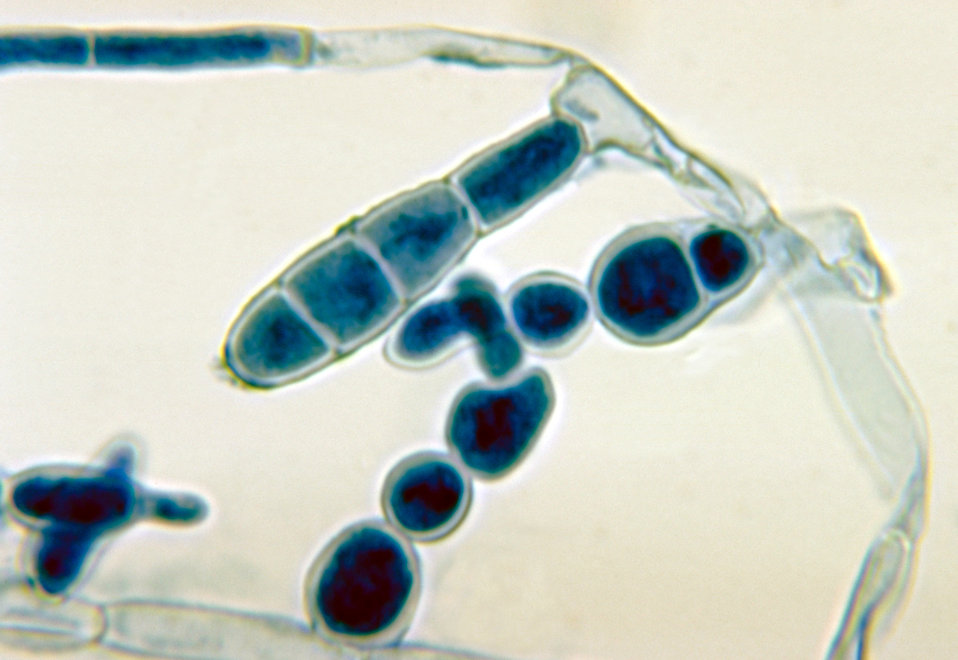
This photomicrograph reveals a number of macroconidia of the dermatophytic fungus Epidermophyton floccosum.